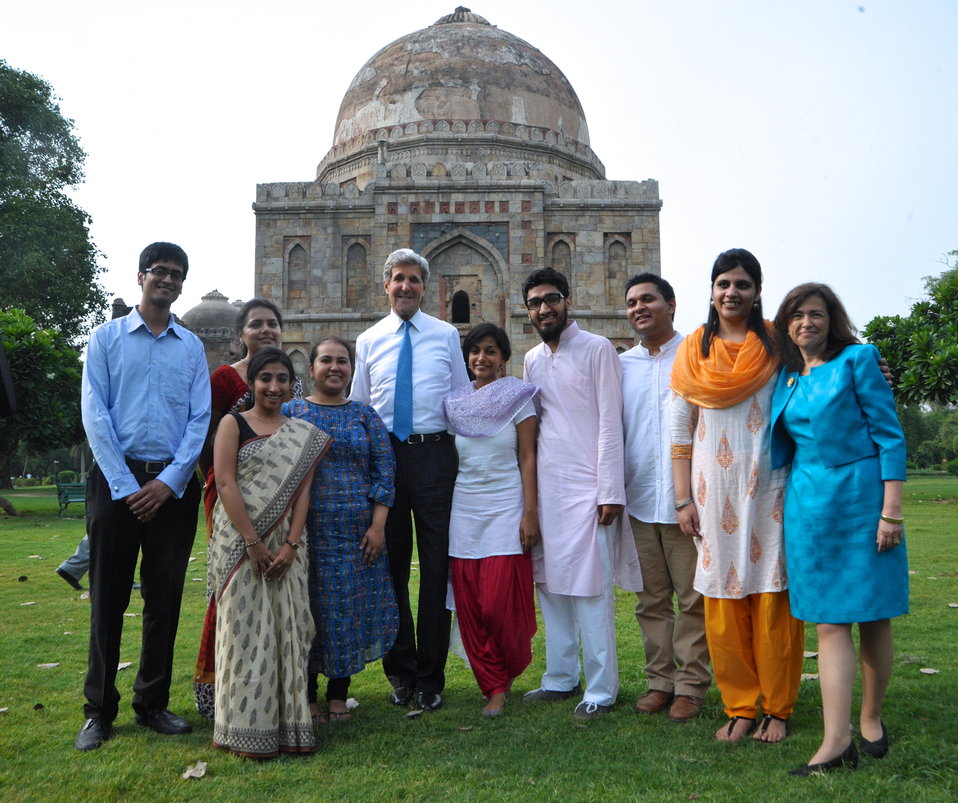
Secretary Kerry Poses for a Photo With Young Indian Leaders

U.S. Secretary of State John Kerry poses for a photo with young Indian leaders who have participated in programs in the United States as he arrives at Lodi Gardens in New Delhi, India on June 24, 2013.